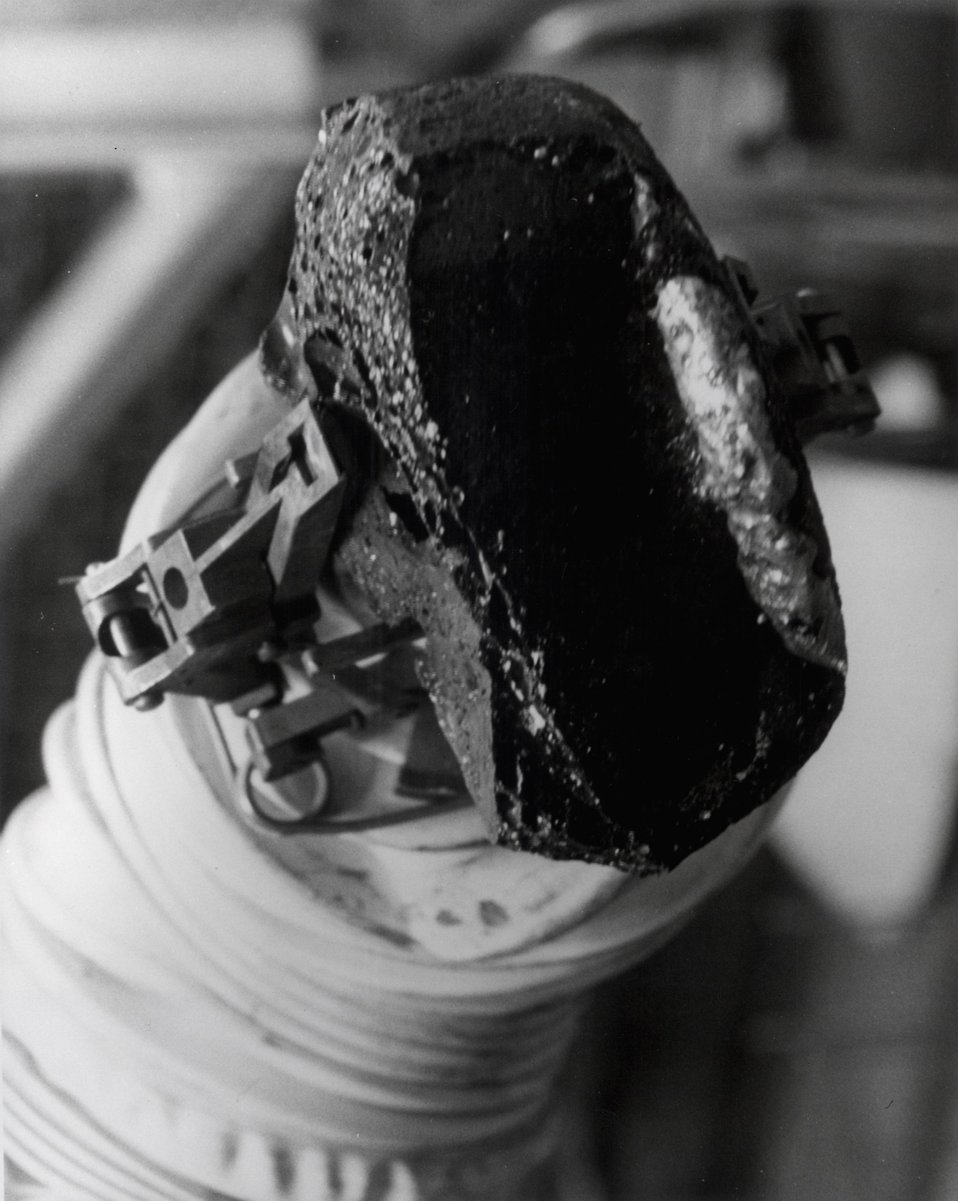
Highly insoluble rock-like material containing solidified radioactive waste from the underground waste tanks at the Energy Research and Development Administration's Hanford site has been produced in an Atlantic Richfield Hanford Company laboratory. Circa 1975.